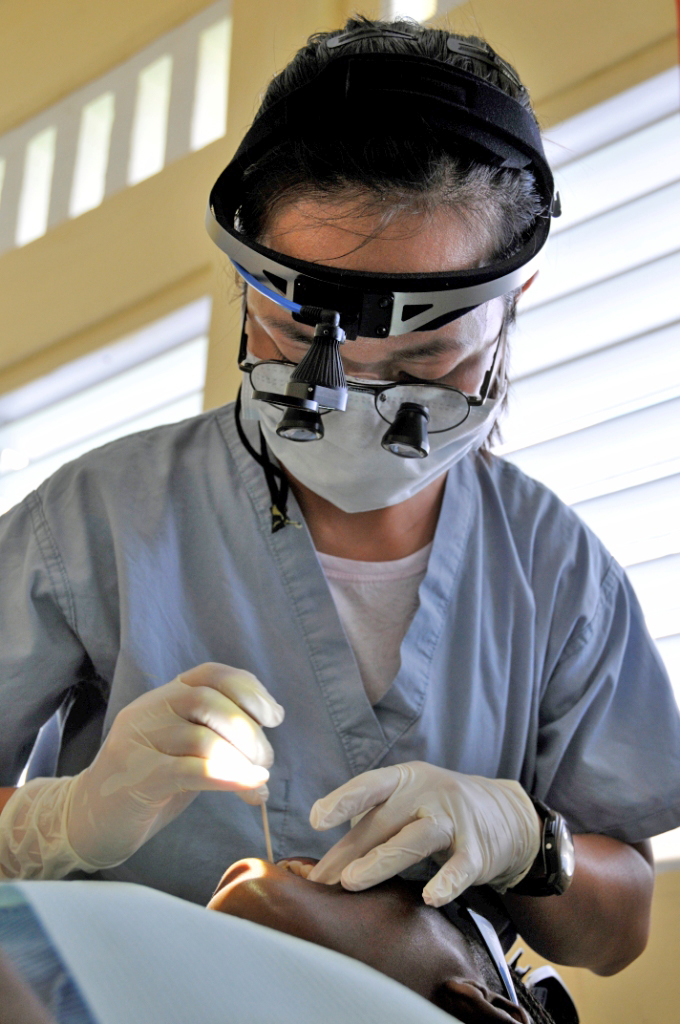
New Horizons Guyana 2009 comes to a close

Capt. Dan Nguyen performs a root canal on a Guyanese woman during exercise New Horizons Guyana 2009 July 20, 2009, in Diamond, Guyana. New Horizons Guyana 2009 is a U.S. Southern Command-sponsored humanitarian event that will benefit thousands of Guyanese citizens in Georgetown and outlying areas. Captain Nguyen is assigned to the 59th Dental Group from Lackland Air Force Base, Texas.